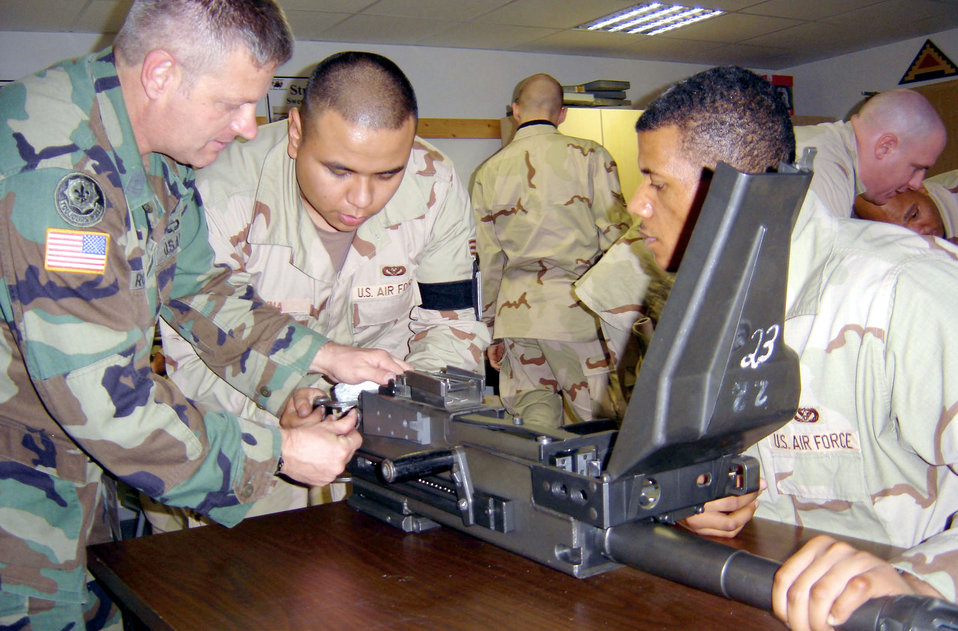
Airmen providing civil engineering support to Soldiers

SPANGDAHLEM AIR BASE, Germany -- (From left) Retired Army 1st Sgt. Ernest Roth trains Senior Airman Armando Luna and Airman 1st Class Anthony Greeley on operating and assembling a Mark-19 automatic grenade launcher. Sergeant Roth is a 7th Army Training Command master gunner. Airman Luna is an electrical systems journeyman, and Airman Greeley is a structural apprentice. Both Airmen are assigned to the 52nd Civil Engineer Squadron here.